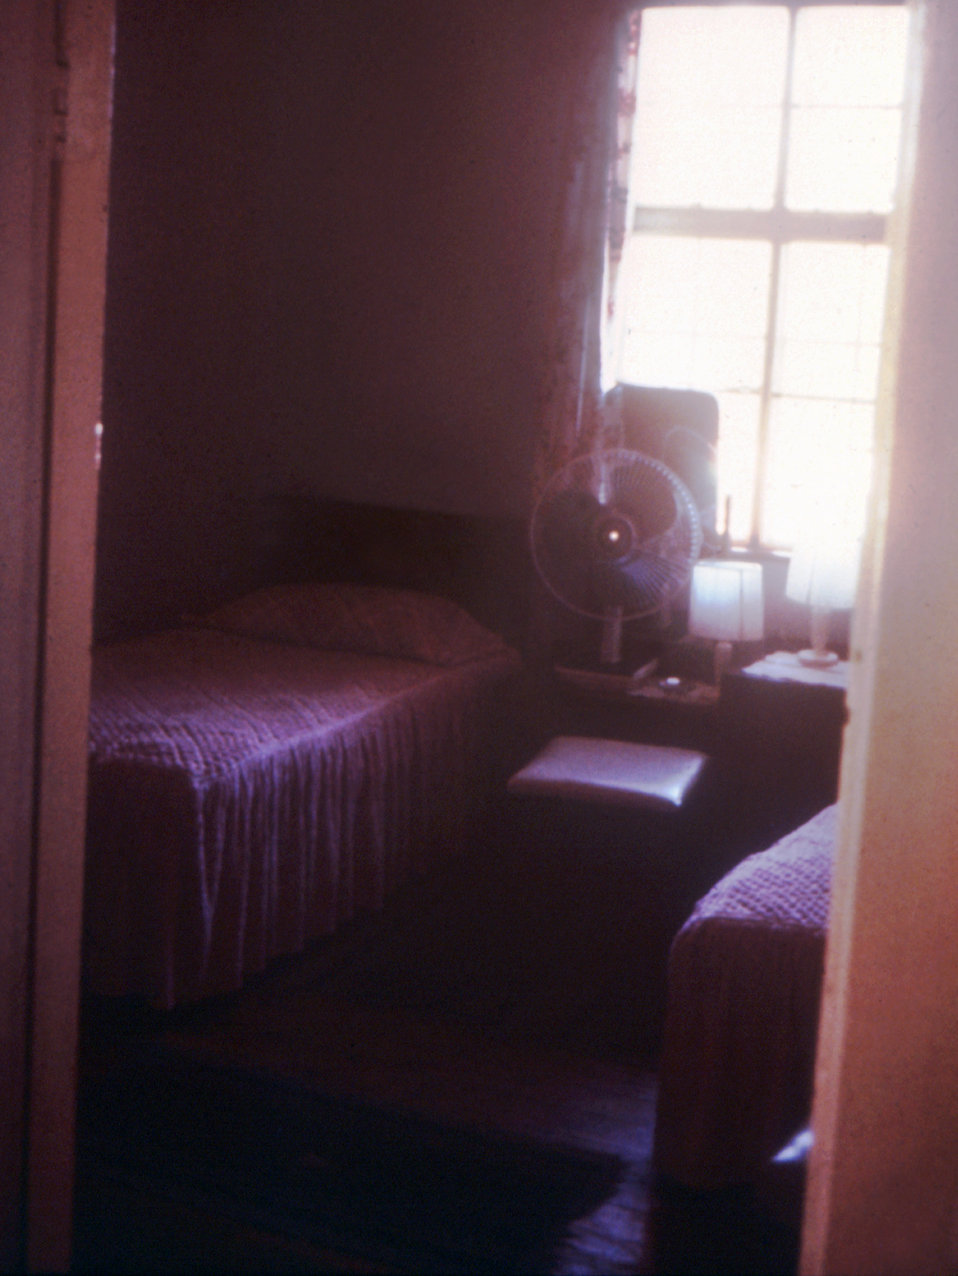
This hostel, located in Salisbury, Rhodesia, now Zimbabwe, was photographed during a 1975 CDC Marburg virus investigation.